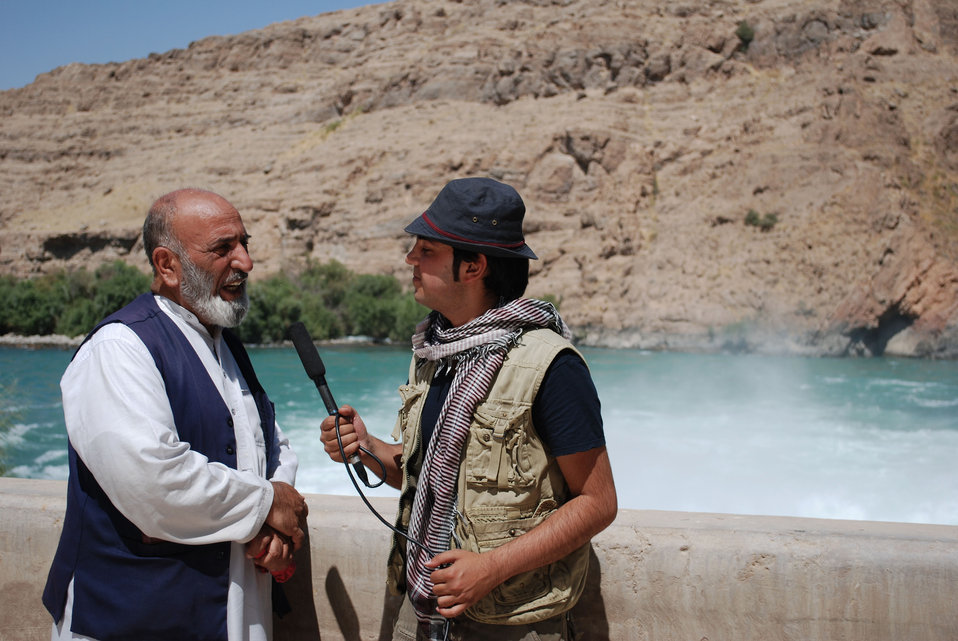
'On the Road' in Kandahar